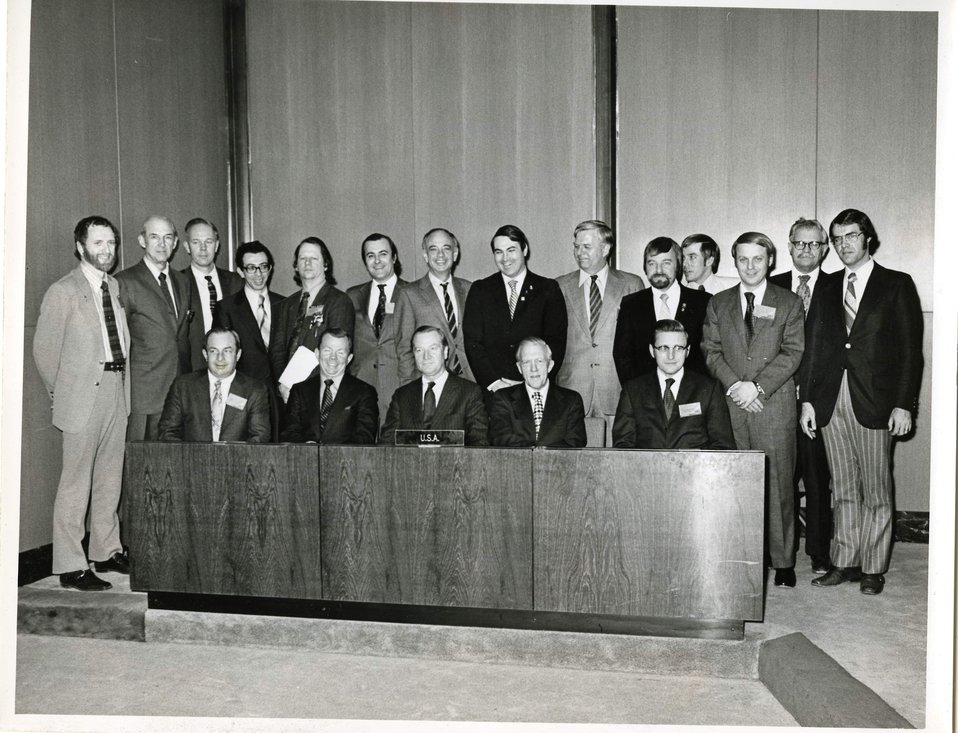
#40 - CITES History Tidbit

Countdown to CoP16: CITES was first agreed on March 3, 1973 at a meeting of representatives from 80 countries held in Washington, D.C. Today, the treaty is implemented by 177 member nations--referred to as Parties-- making it a truly global, cooperative effort to regulate wildlife trade. Check out the amazing photo below of the US delegation to the 1973 meeting!

US Delegation to CoP1. Taken by USFWS, Bern, Switzerland, 1976.